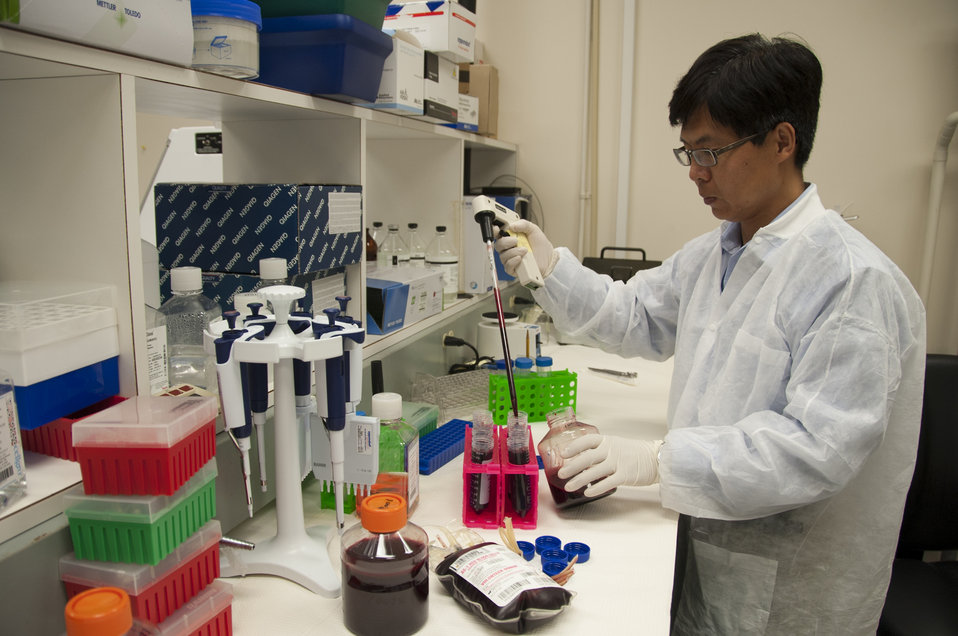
Blood Research: Saving Lives (8347)

Jason Liu, Ph.D., laboratory chief at FDA’s Office of Blood Research and Review, transferring blood to 50 ml tubes as he prepared to isolate blood components. A unit of whole blood can be separated, for example, into platelets and red blood cells. The separated components can be studied separately and can be used for different patients with different needs. FDA is responsible for the safety of our nation’s blood supply and is at the forefront of evaluating and encouraging innovative technologies for protecting it.

Read this Consumer Update to learn more: Advances in Saving Lives with Blood